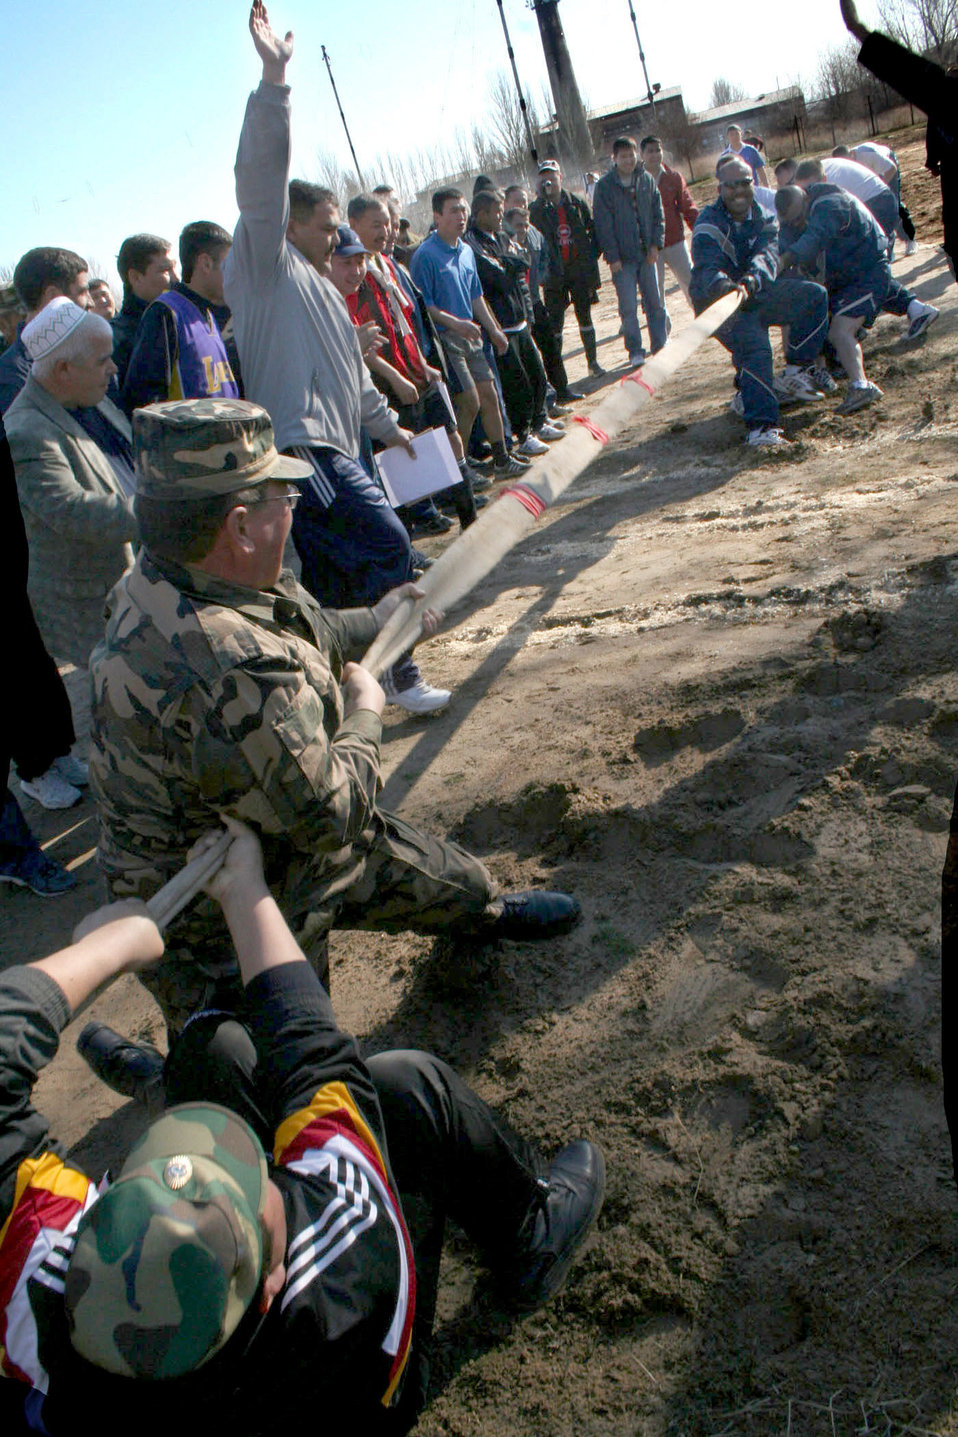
Manas AB and local community forge bonds of friendship

Airmen struggle against a team of Manas International Airport personnel determined to pull them over the line in a tug-of-war competition as part of Revolution Day celebrations Thursday, March 23, 2006, in Kyrgyzstan. The airport's secretary of security, Mamyrov Nadybek, invited the Airmen to participate in the games as a mark of friendship and mutual respect. The day included races, tournaments and strength competitions.